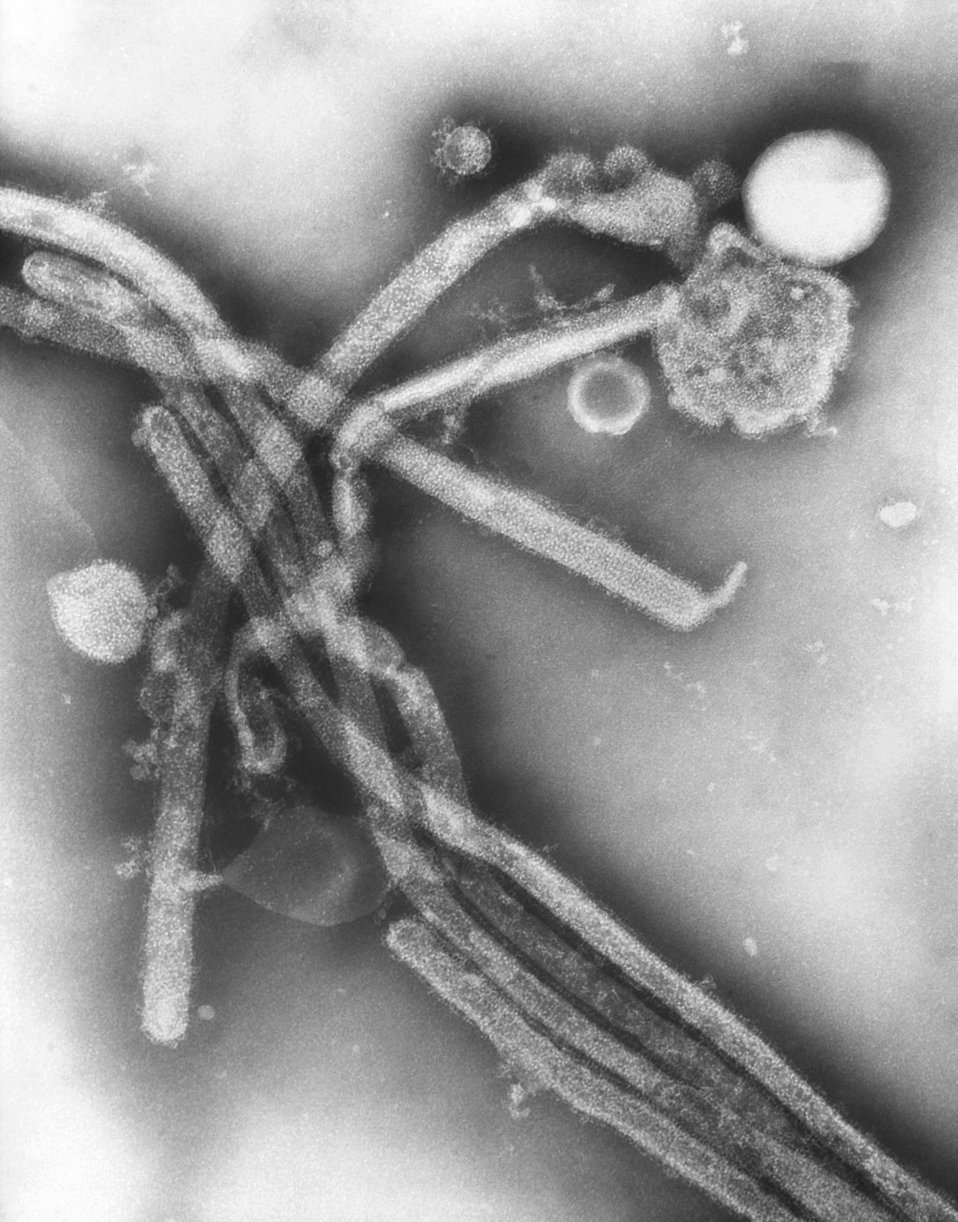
This negatively-stained transmission electron micrograph (TEM) revealed the presence of a number of Hong Kong flu virus virions, the H3N2 subtype of the influenza A virus. This virus is a Orthomyxoviridae virus family member, and was responsible for the flu pandemic of 1968-1969, which infected an estimated 50,000,000 people in the United States, killing 33,000. Note the proteinaceous coat, or capsid, surrounding each virion, and the hemagglutinin-neuraminidase spikes, which differ in terms of their molecular make-up from strain to strain.